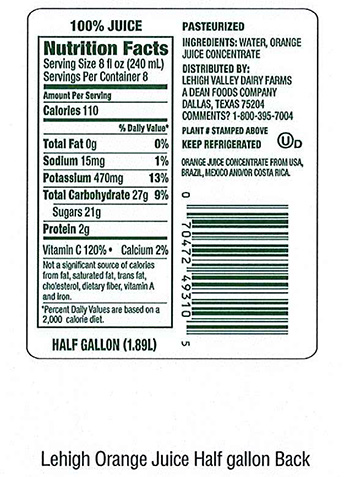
RECALLED – Orange Juice

March 3, 2014 – Product Recall – Lehigh Valley Dairy Conducts Voluntary Recall of Lehigh Valley, Swiss Premium, and Price Chopper Brand Orange Juice Because It May Contain Undeclared Allergen (Milk).